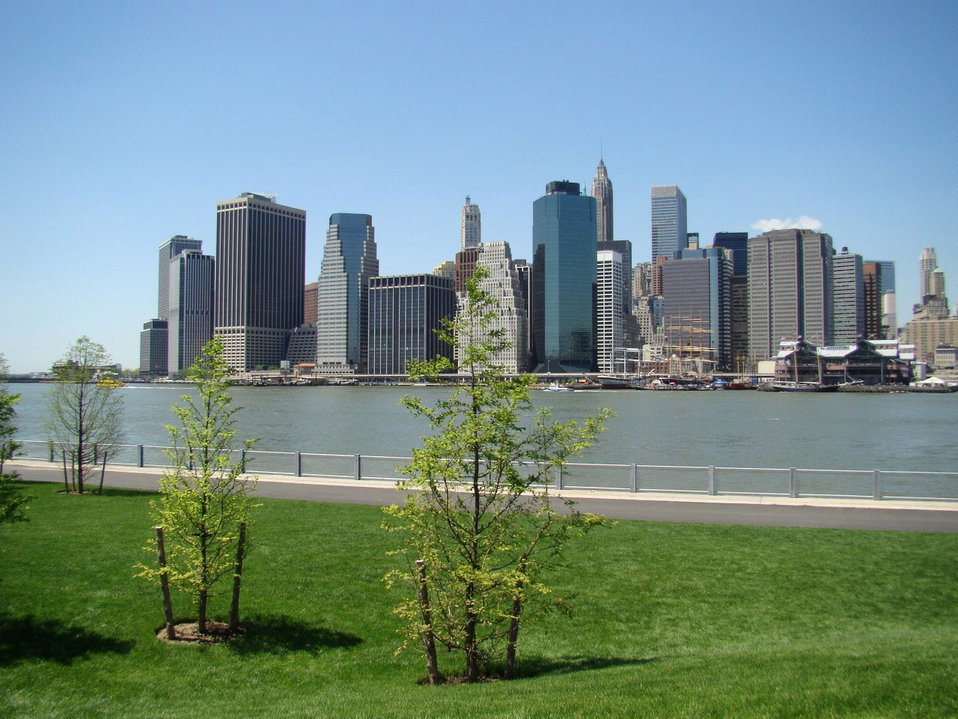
Ny financial district

Downtown wall str area view from brooklyn side.